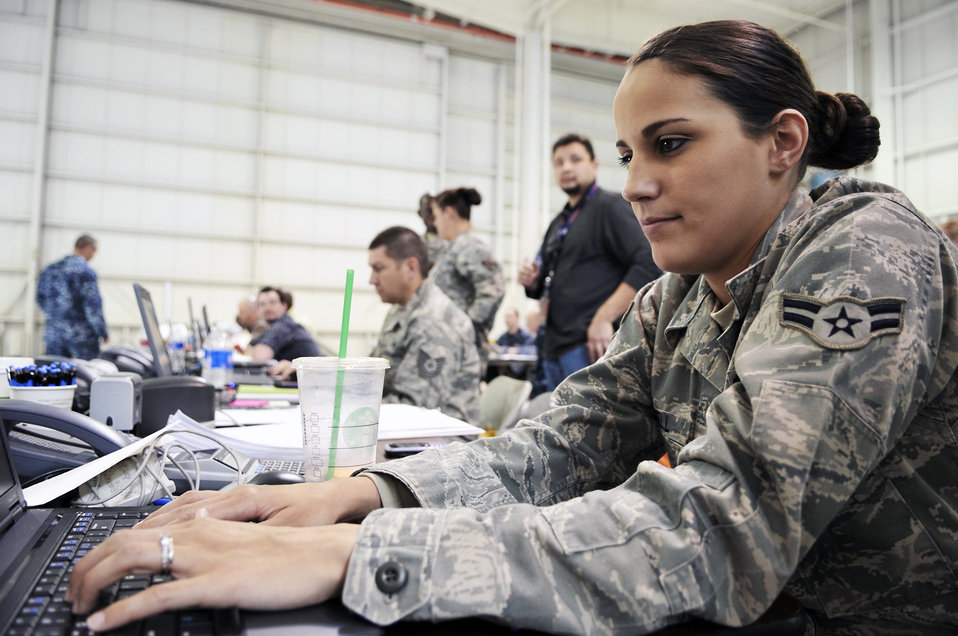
Military family members arrive

Airman 1st Class Reagan Dowell assists with the inprocessing of military family members arriving from Japan March 24, 2011, in Denver. Airman Dowell is assigned to the 460th Comptroller Squadron at Buckley Air Force Base, Colo. Family members voluntarily evacuated from Japan due to the recent natural disaster.